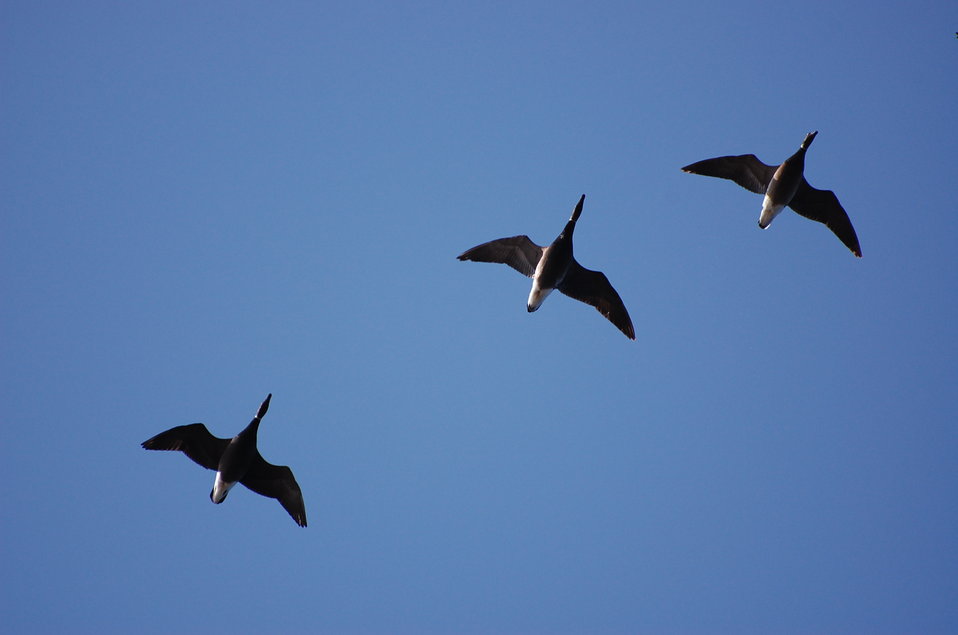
Brant at Izembek Lagoon

Izembek National Wildlife Refuge